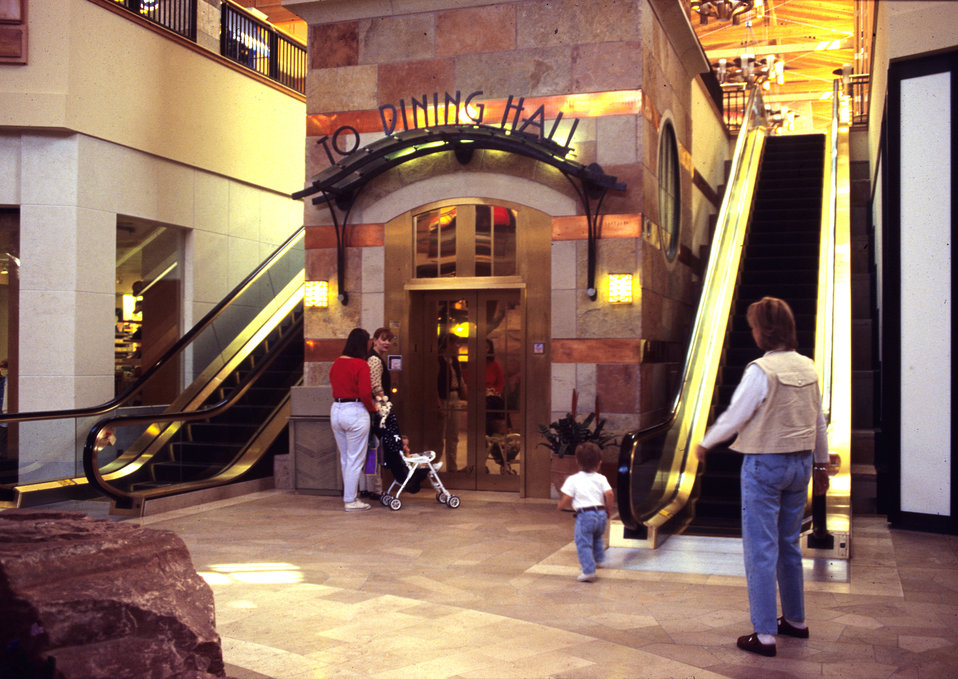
Awaiting modes of conveyance, these mall patrons were about to make use of an escalator, which was situated adjacent to an elevator. Two women, one pushing a baby carriage, would be riding the latter, while a woman with her toddler were about to embark on an escalator ride. Placing these transport modalities side-by-side eliminated a sense of group segregation, especially for the mobility-challenged.